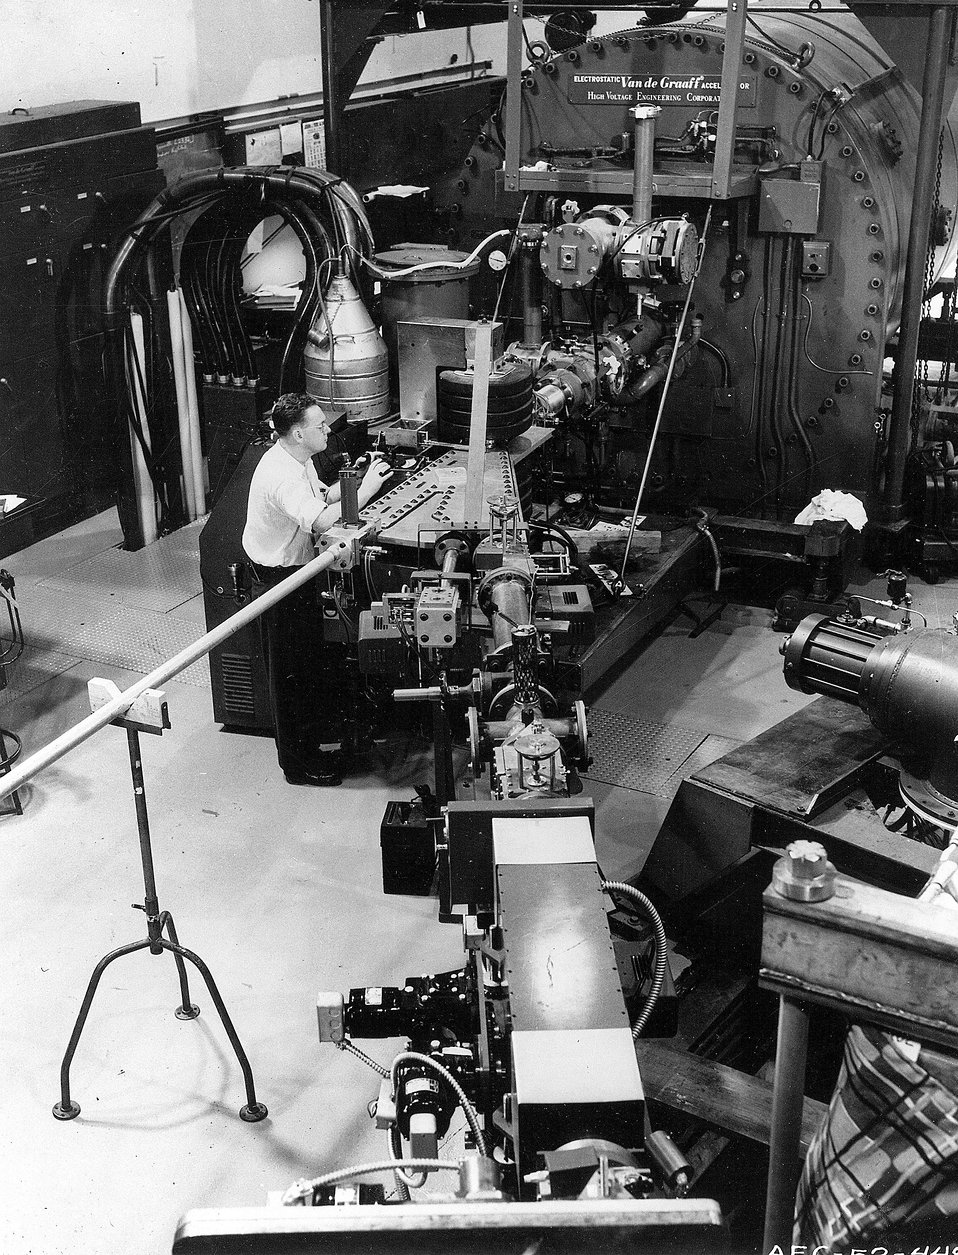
Injection system for the Cosmotron at the Brookhaven National Laboratory. c. 1952